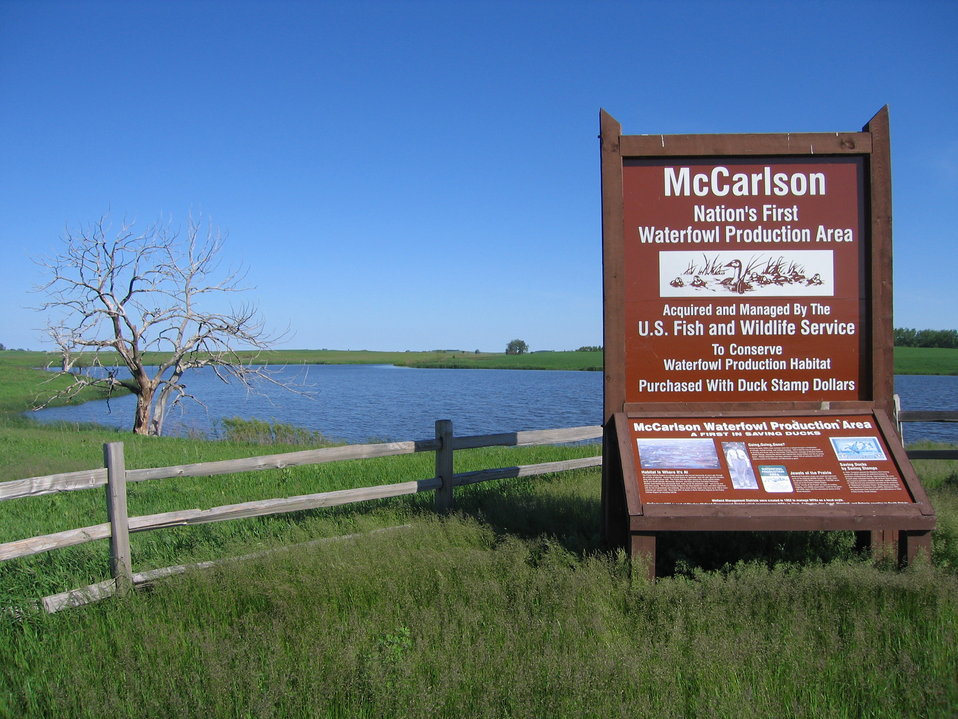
The First in the Country

McCarlson was the first Waterfowl Production Area established in the country after amending the Migratory Bird Stamp Act to allow the purchase of smaller tracts of land specifically to provide habitat for breeding waterfowl.